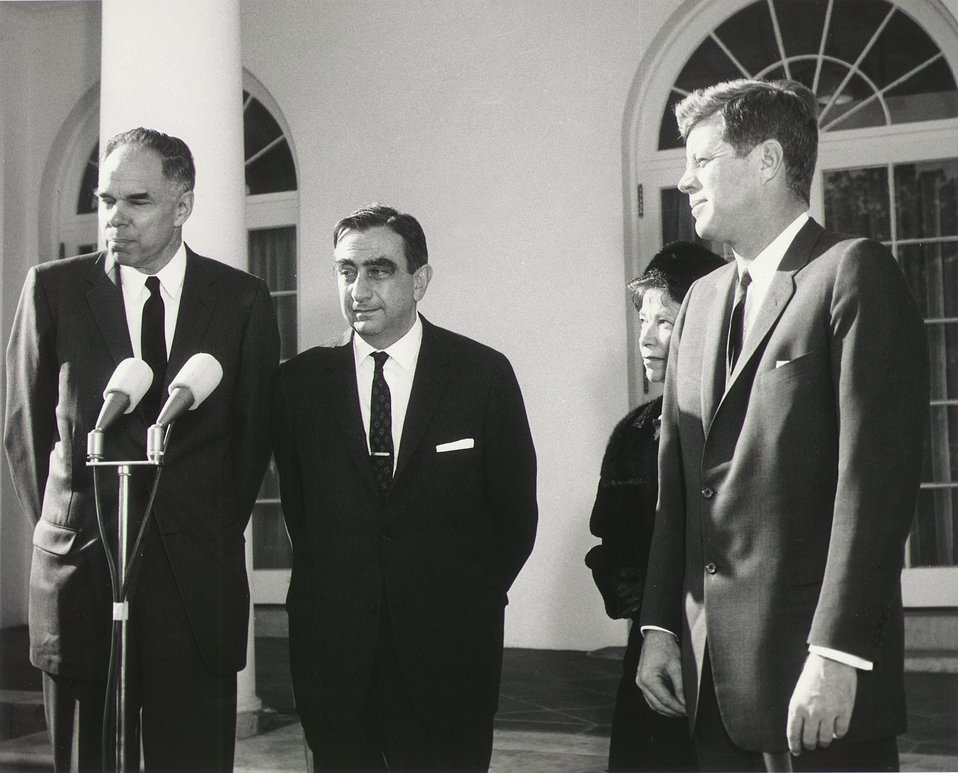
Fermi Award for Teller in 1962.